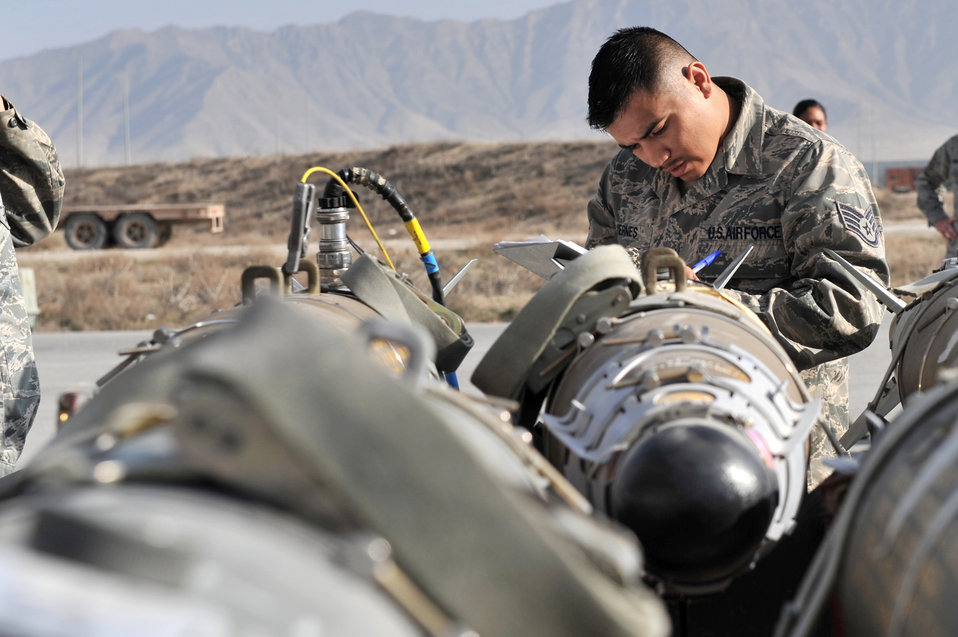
Ammo airmen supply the fight

Staff Sgt. Raul Viernes goes through a post-load checklist March 23, 2011, at Bagram Airfield, Afghanistan. Sergeant Viernes ensured there were no discrepancies on a GBU-54 joint direct attack munition. Sergeant Vierness is an ammunition supply point technician assigned to the 455th Expeditionary Maintenance Squadron.